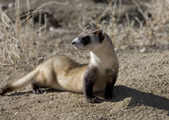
Black footed ferret